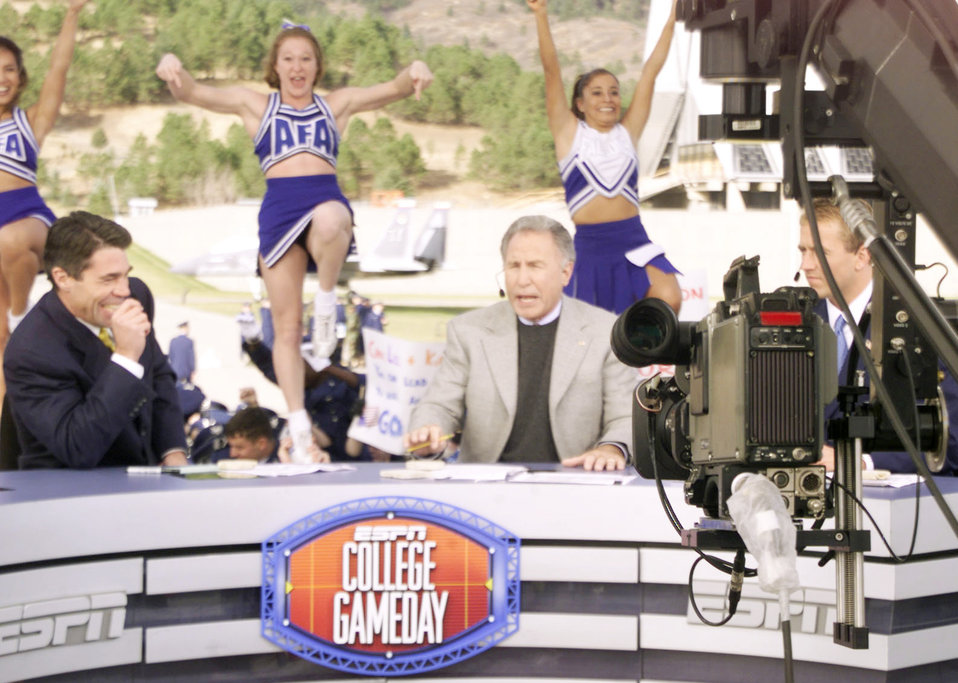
ESPN College Gameday to return to USAFA Nov. 7

ESPN College GameDay host Chris Fowler, left, cracks up at the antics going on behind the set, while cohost Lee Corso is on-camera explaining why fans should